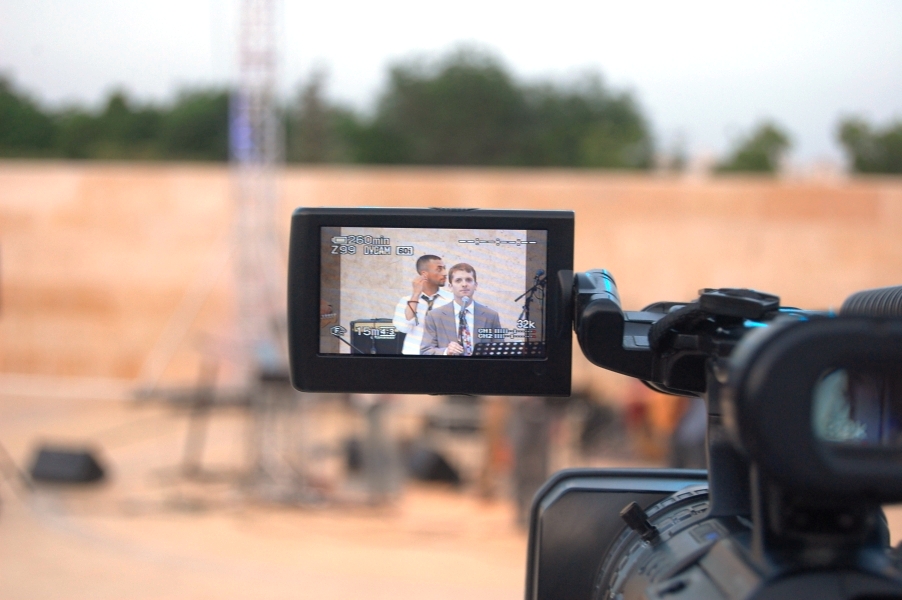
U.S. Embassy Amman Officer Introduces Western Singer

U.S. Embassy Amman’s Assistant Cultural Affairs Officer Seth Wikas introduces Egyptian-American country western singer Kareem Salama (back left) to an audience of almost 1,000 Jordanians at a concert at Al-Hussein Park on May 26, 2010, in Amman, Jordan.